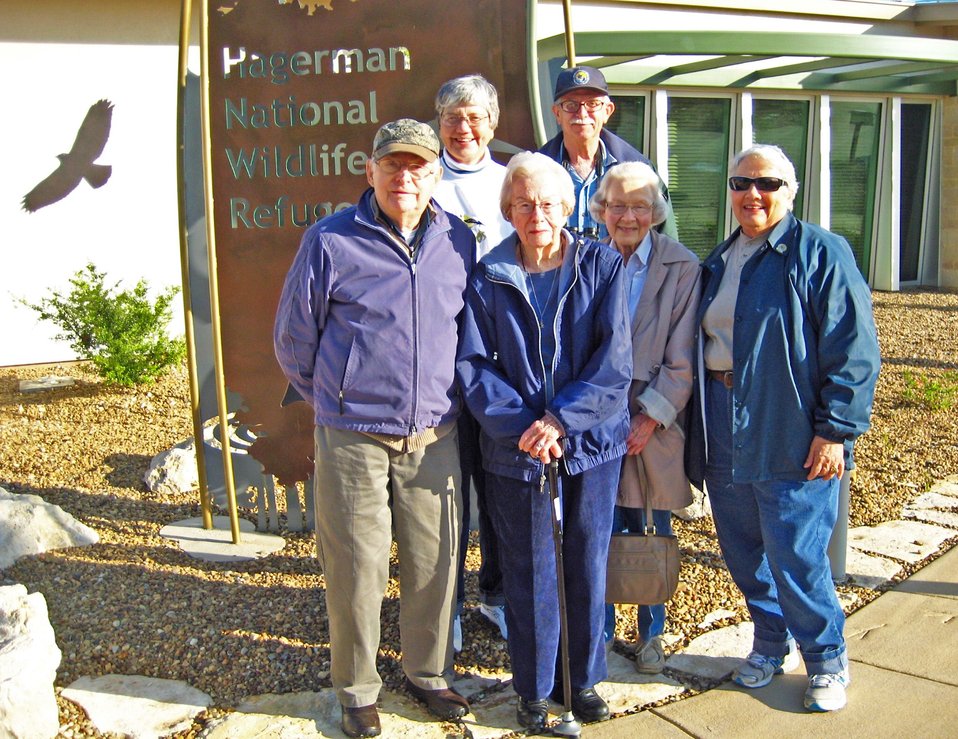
Karl outside 3